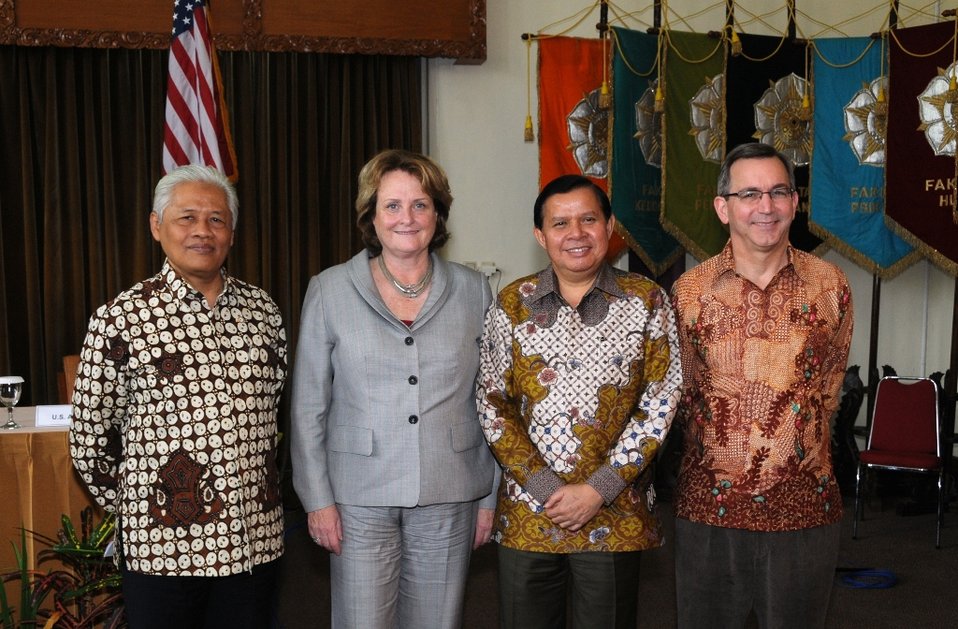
Under Secretary McHale Poses for a Photo With Professor Sudjarwadi, Indonesia Deputy Minister of Education Djalal, and Ambassador Marciel

U.S. Undersecretary of State for Public Diplomacy and Public Affairs Judith A. McHale, second to left, with the Rector of Gadjah Mada University (UGM), Professor Sudjarwadi, left, the Indonesian Deputy Minister of Education Professor Fasli Djalal, second to right, and U.S. Ambassador to Indonesia Scot Marciel, right, after a panel discussion on on entrepreneurship education with students and faculty at the Gadjah Mada University in Yogyakarta, Indonesia, on December 4, 2010.